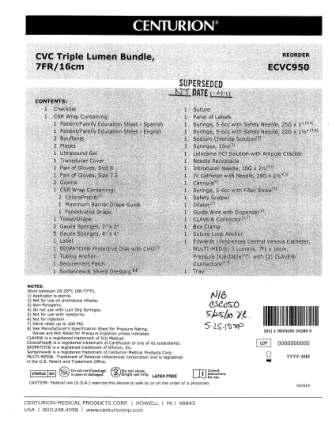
RECALLED - Convenience kits which contain bacteriostatic sodium chloride solution by American Regent

April 1, 2011 - Product Recall - Centurion Medical Products Initiates Voluntary Recall of Customized Convenience Kits (including select Central Venous Catheter, PICC Insertion, and VAD Trays) that contain American Regent’s Bacteriostatic Sodium Chloride Injection, USP, 0.9% 30 mL Multiple Dose Vials.